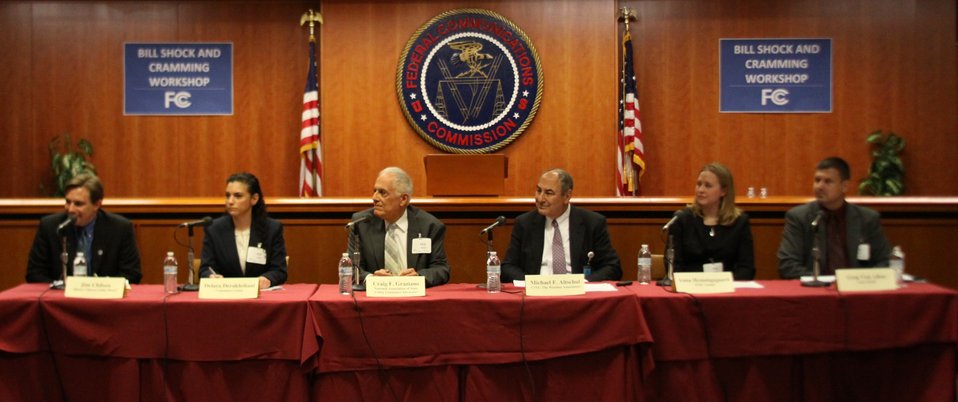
April 17, 2013 Bill Shock and Cramming Workshop Panel: Wireless Cramming Issues and Cramming Further Notice of Proposed Rulemaking